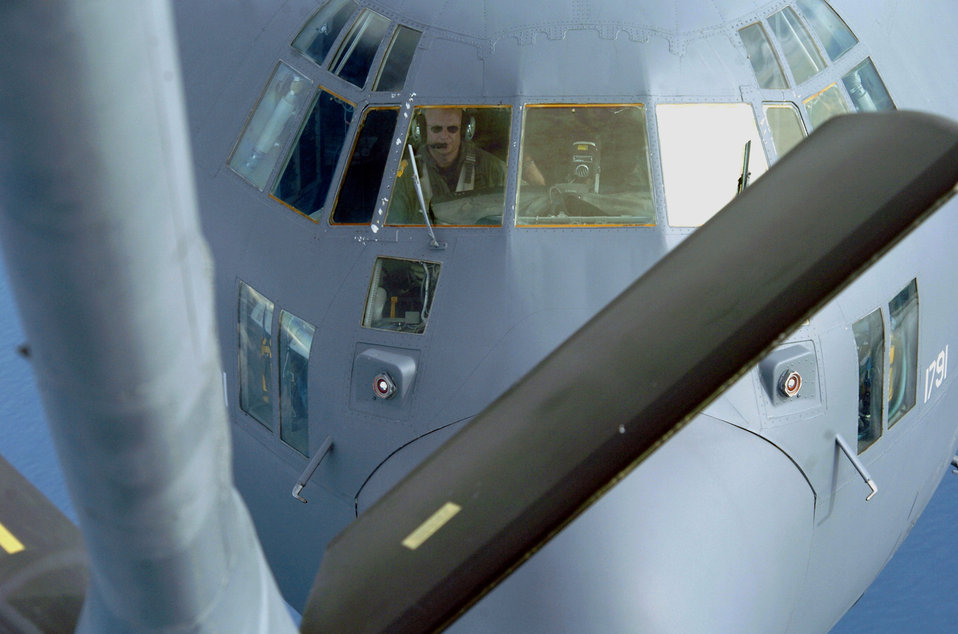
Got gas?

OVER THE PACIFIC OCEAN -- Maj. Jeff Flint prepares to hook up his C-130 Hercules with a KC-135 Stratotanker from the 909th Air Refueling Squadron at Kadena Air Base, Japan. The refueling squadron's aircrews support peacetime operations and all levels of conflict in the Pacific theater. He is a Hercules pilot with the 1st Special Operations Squadron, also at Kadena.